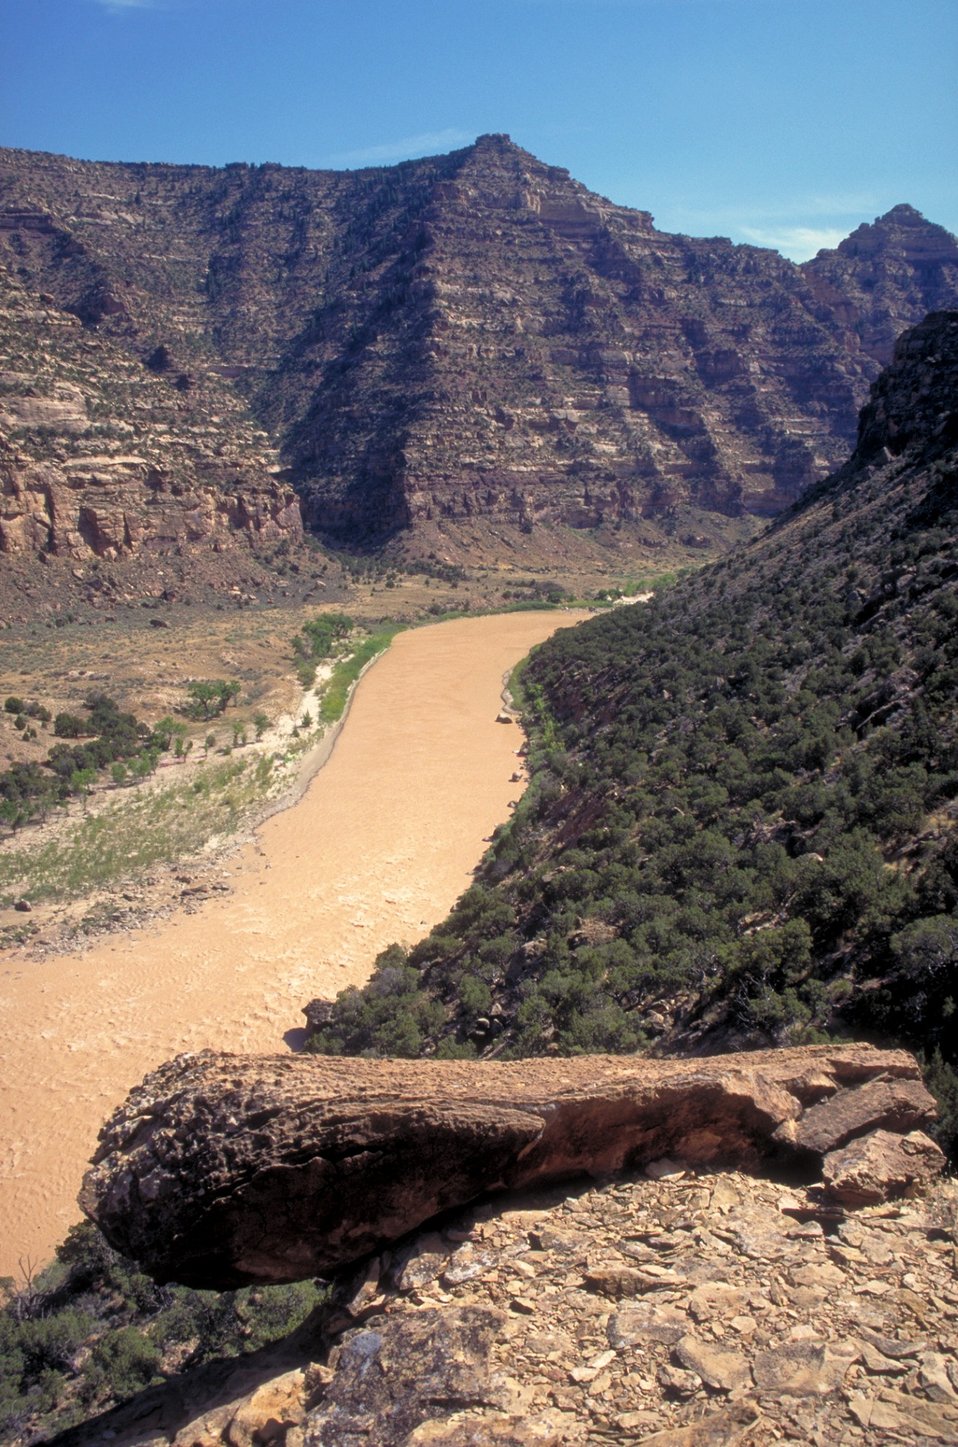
Desolation/Gray Canyons near Price, Utah.